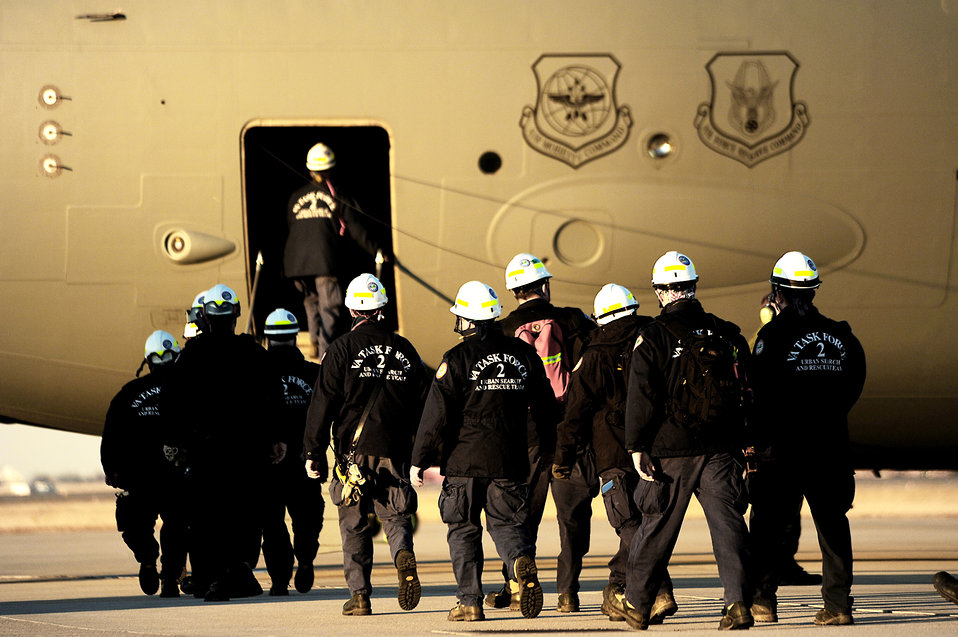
Haiti Earthquake Relief

Members from the Virginia Task Force 2 Urban Search and Rescue board a C-17 Globemaster III from Charleston Air Force Base, S.C. Jan. 15, 2010, at Norfolk, Va. The Virginia Task Force 2 team is heading to Haiti as part of the Haiti earthquake relief effort.